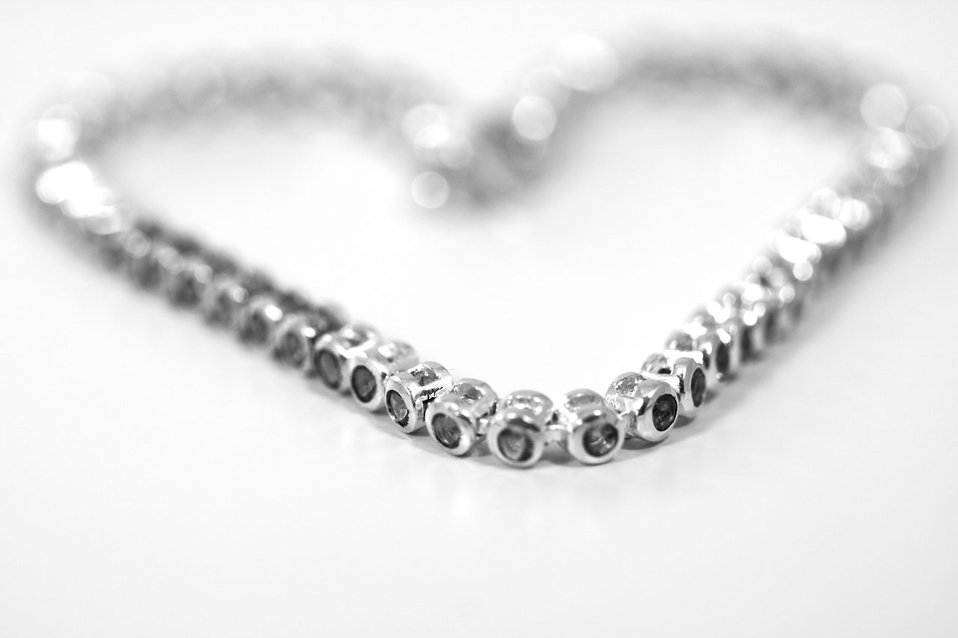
Jewellery heart

Heart made from a necklace.